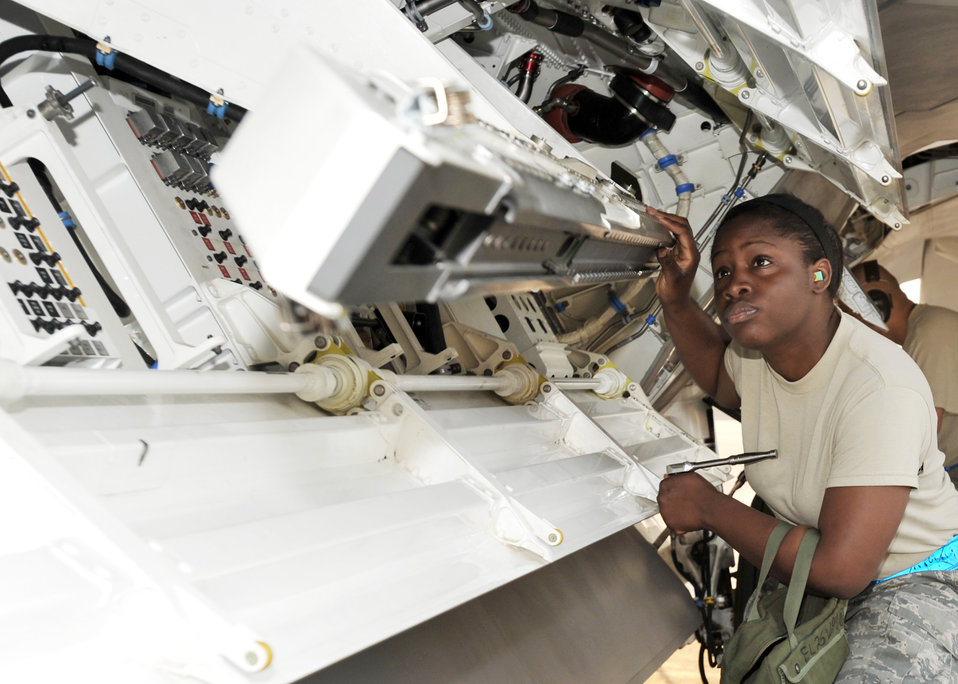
Alaskan load crews compete

Airman 1st Class Thomasina Smalls inspects the missile bay of an F-22 Raptor during a load crew competition July 10 at Elmendorf Air Force Base, Alaska. She is assigned to the 3rd Aircraft Maintenance Squadron.